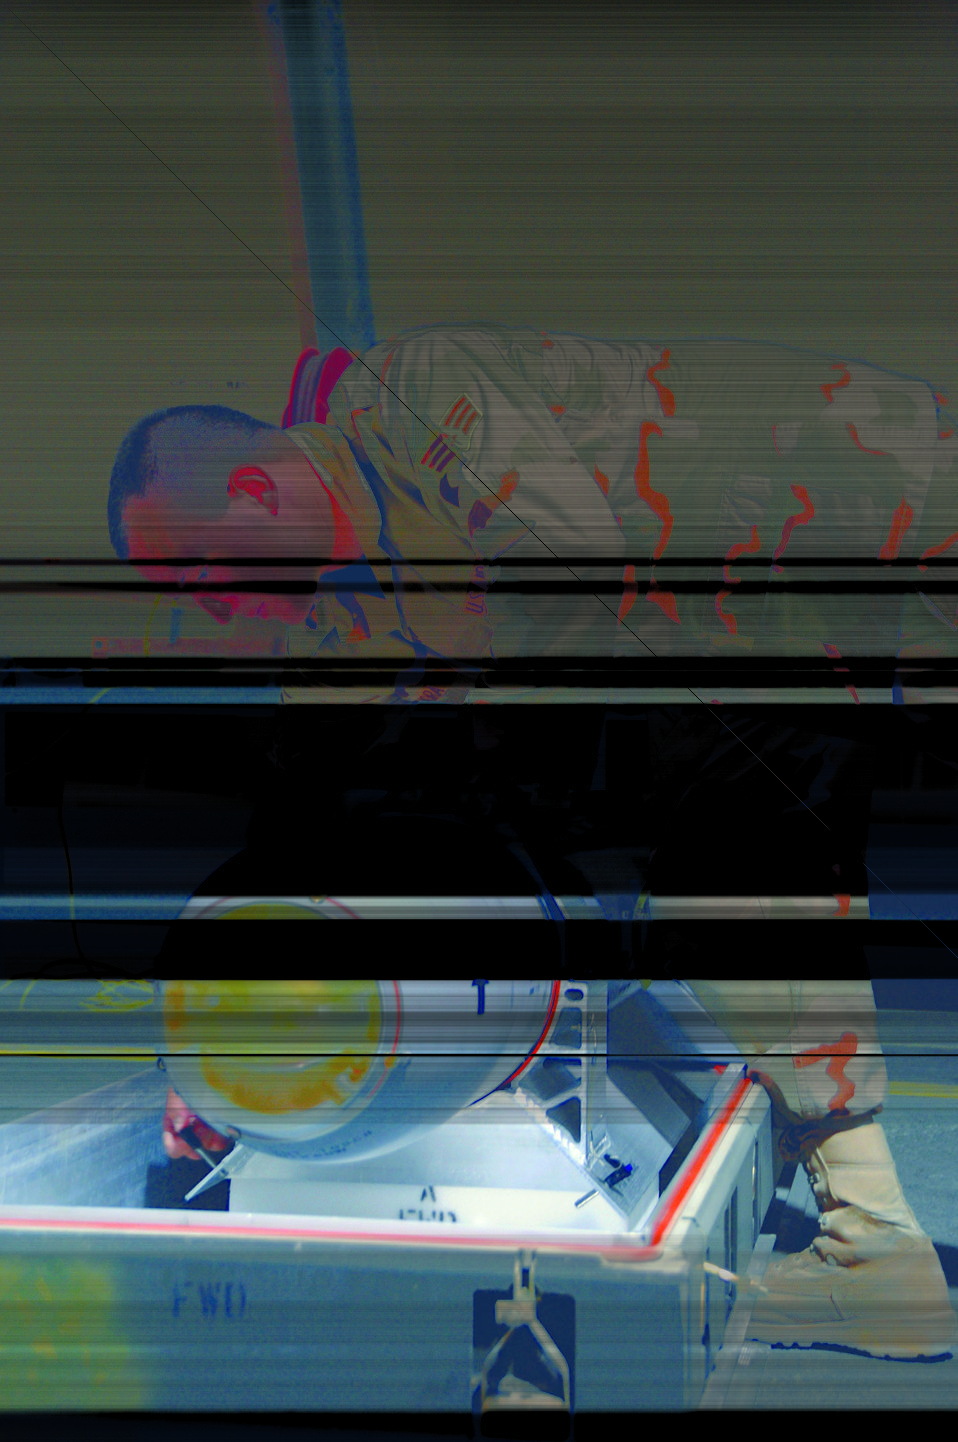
Going above and beyond: Everyday business in the Munitions Flight

Senior Airman Fernando Mora pulls the pin on a harness holding an AGM-65 missile in Southwest Asia recently. Airman Mora removed the harness as one of the steps in a visual inspection of the missile. Airman Mora is assigned to the 379th Expeditionary Maintenance Squadron, hails from San Diego, and is deployed from Nellis Air Force Base, Nev.